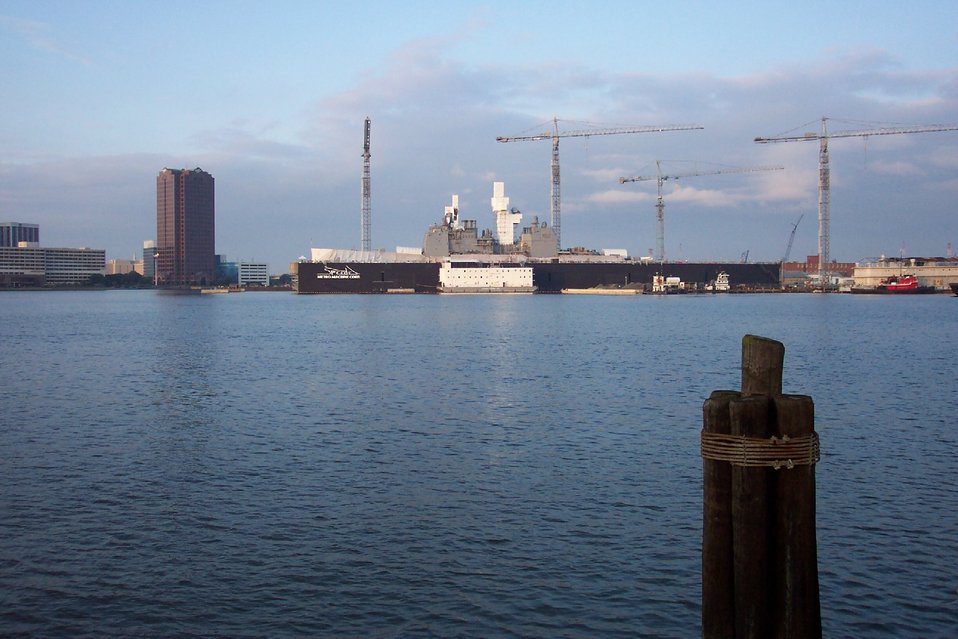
A navy ship in drydock at Norfolk as seen from Portsmouth.